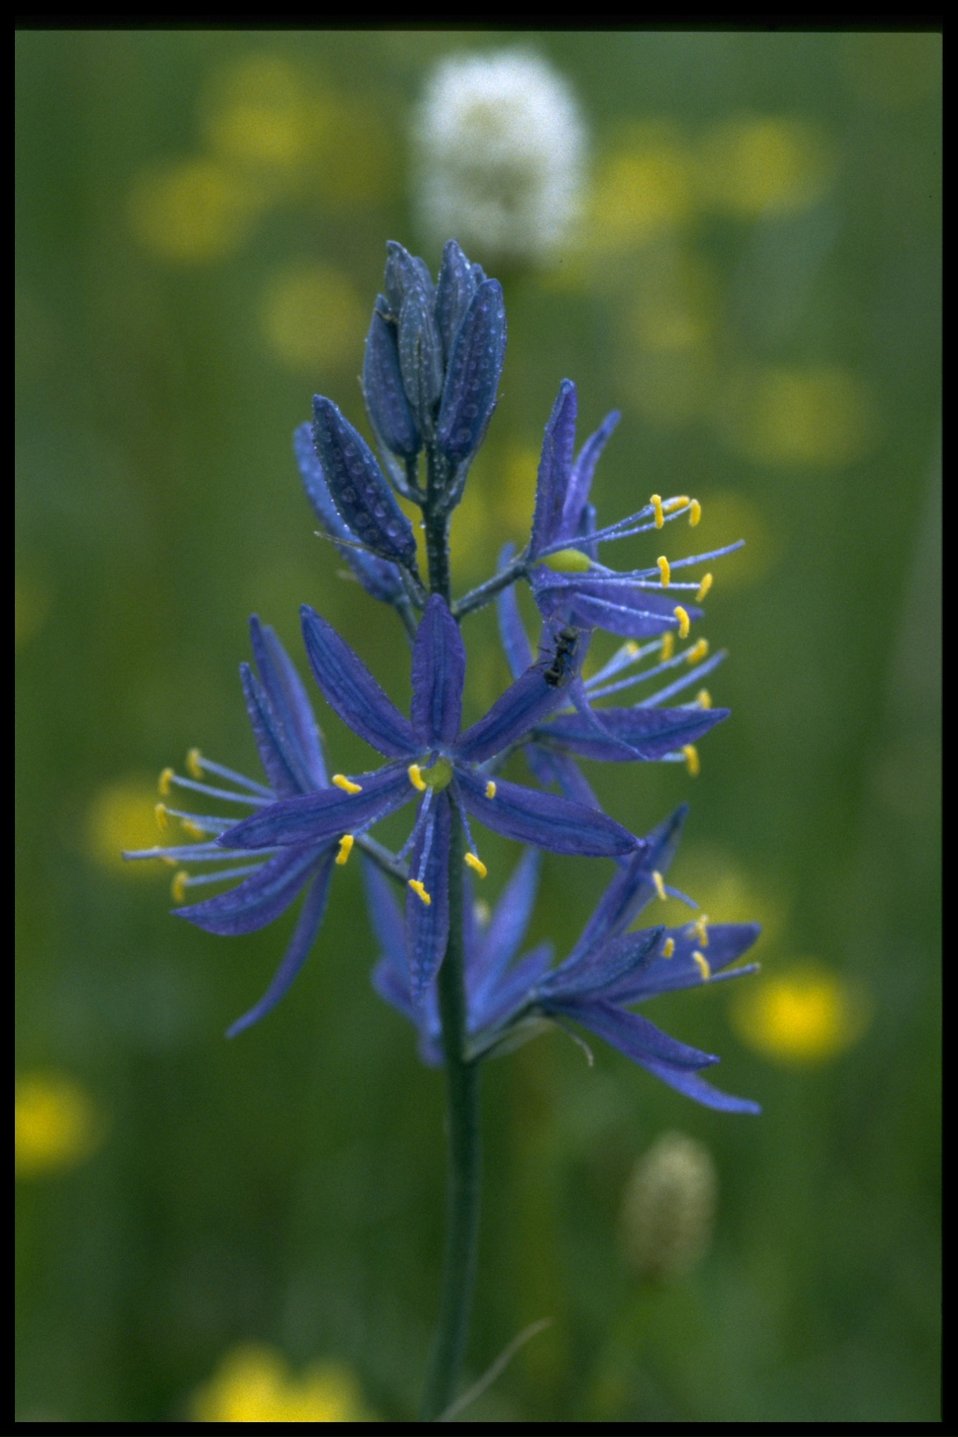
Closeup shot of small camas (Camassia quamash).